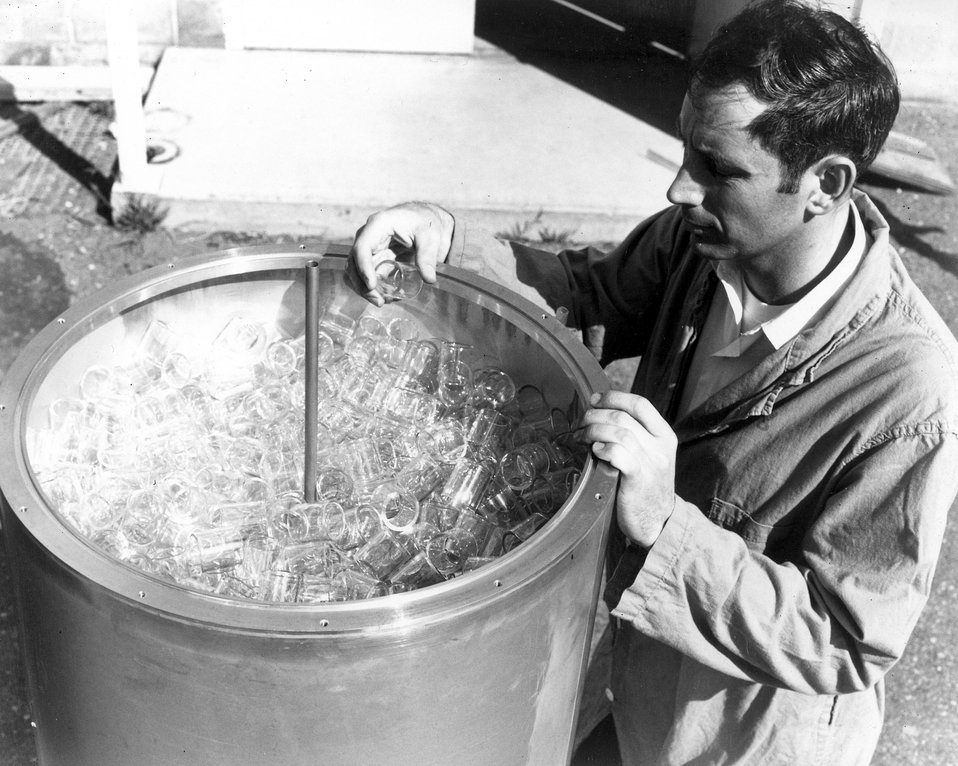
Glass reaching rings can be used as a method of preventing an accidental chain reaction as the result of critically experiments at the Pacific Northwest Laboratory have shown. c. 1971